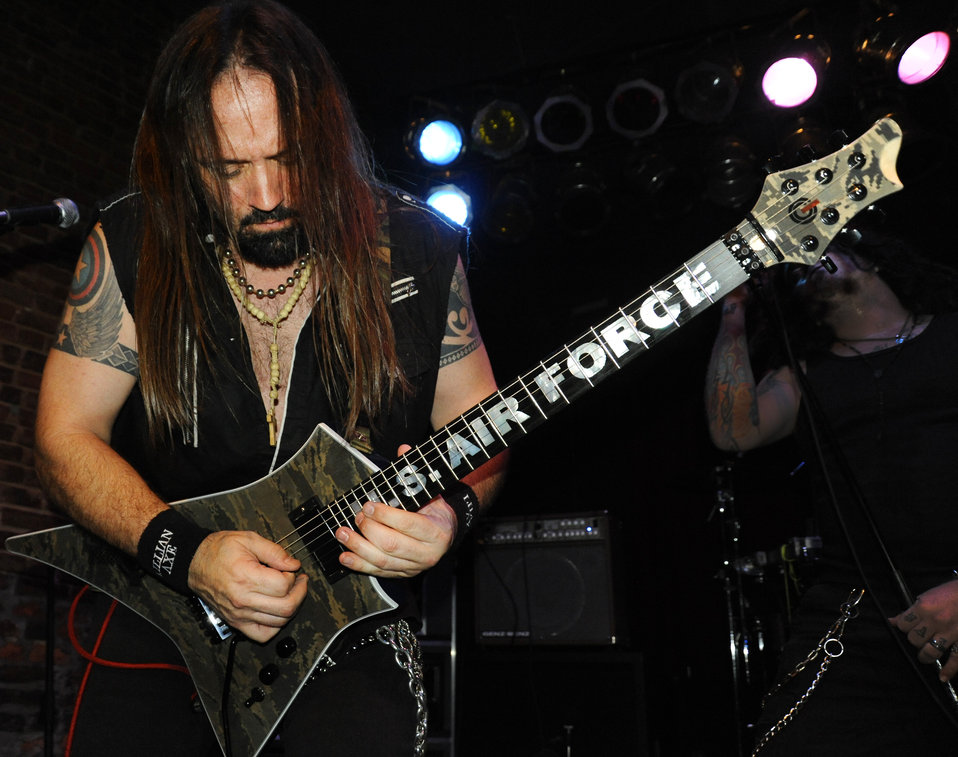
Air Force guitar made to honor fallen Airmen

Steve Blaze plays